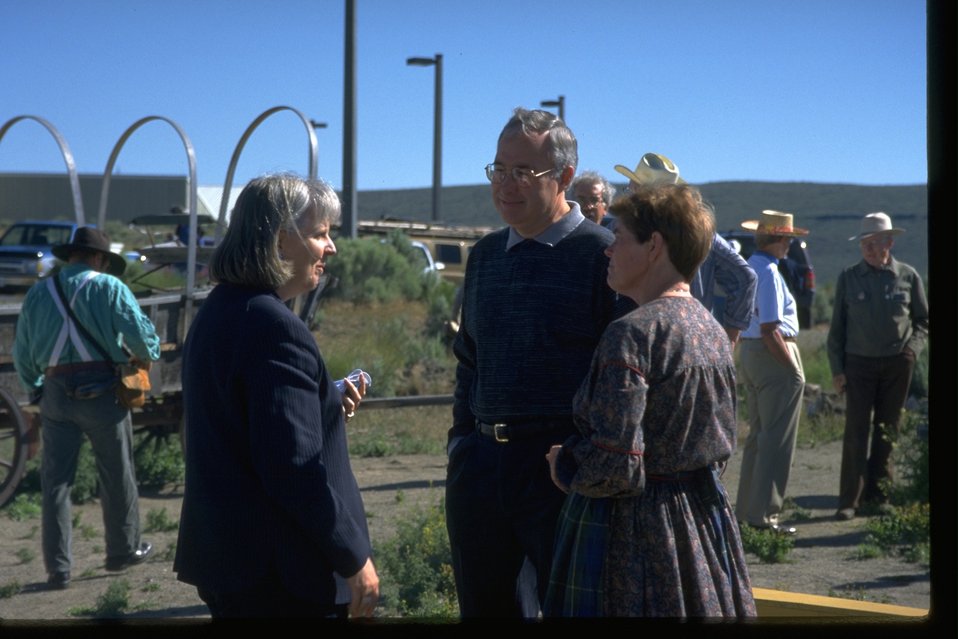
Elaine Zielinski visting with volunteers.